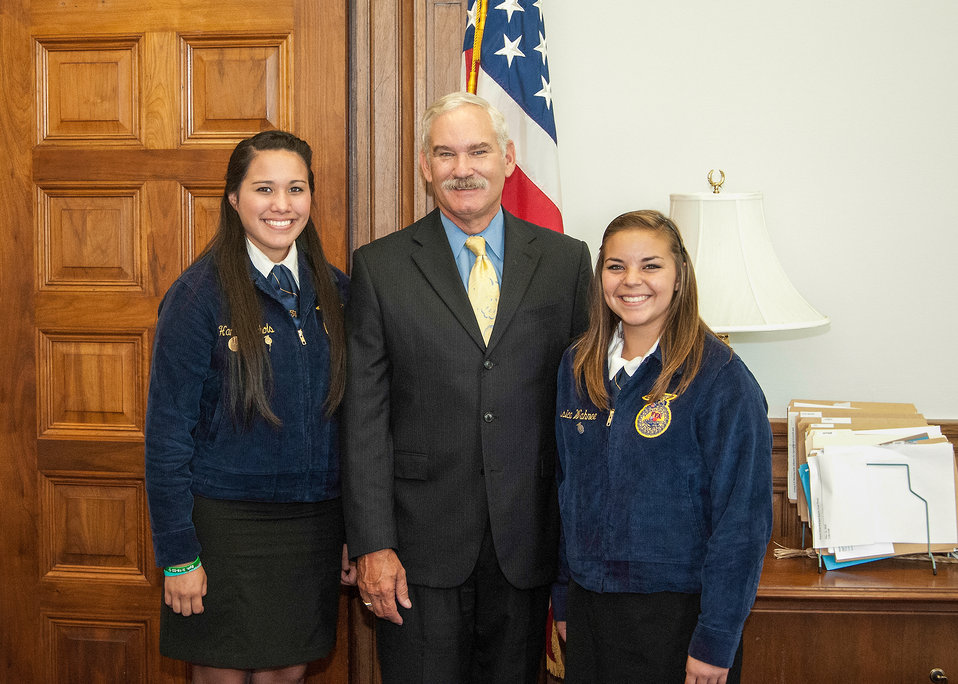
Native American FFA students Louisiana Coushatta Tribe member Hannah Nichols and Muscogee Creek member Jessica Wahnee stand with Agriculture Acting Deputy Secretary Michael Scuse (center) at the U.S. Department of Agriculture on Thursday, Jul. 18, 2013.